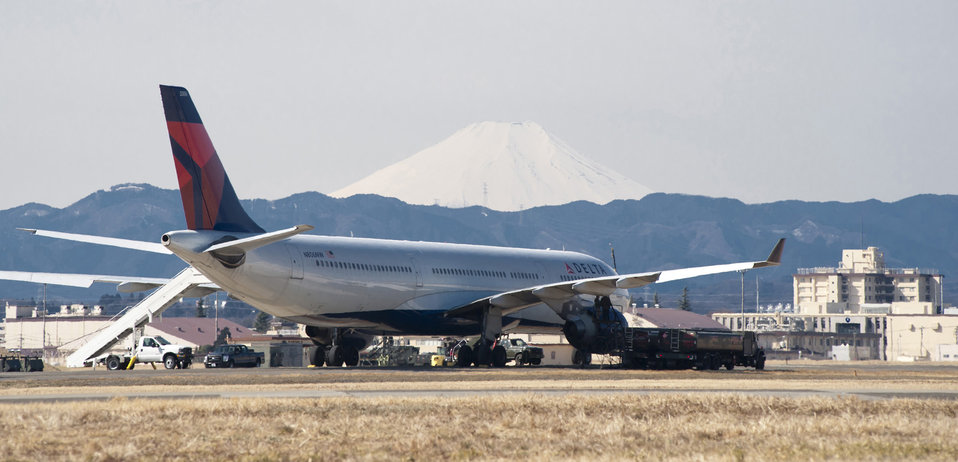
Delta Airlines flights take off safetly from Yokota

U.S. Air Force Airmen from the 374th Logistics Readiness Squadron refuel a Delta Airlines passenger aircraft at Yokota Air Base, Japan, March 12, 2011. The aircraft was diverted to Yokota from Narita International Airport after an 8.9-magnitude earthquake struck off the eastern coast of Japan.